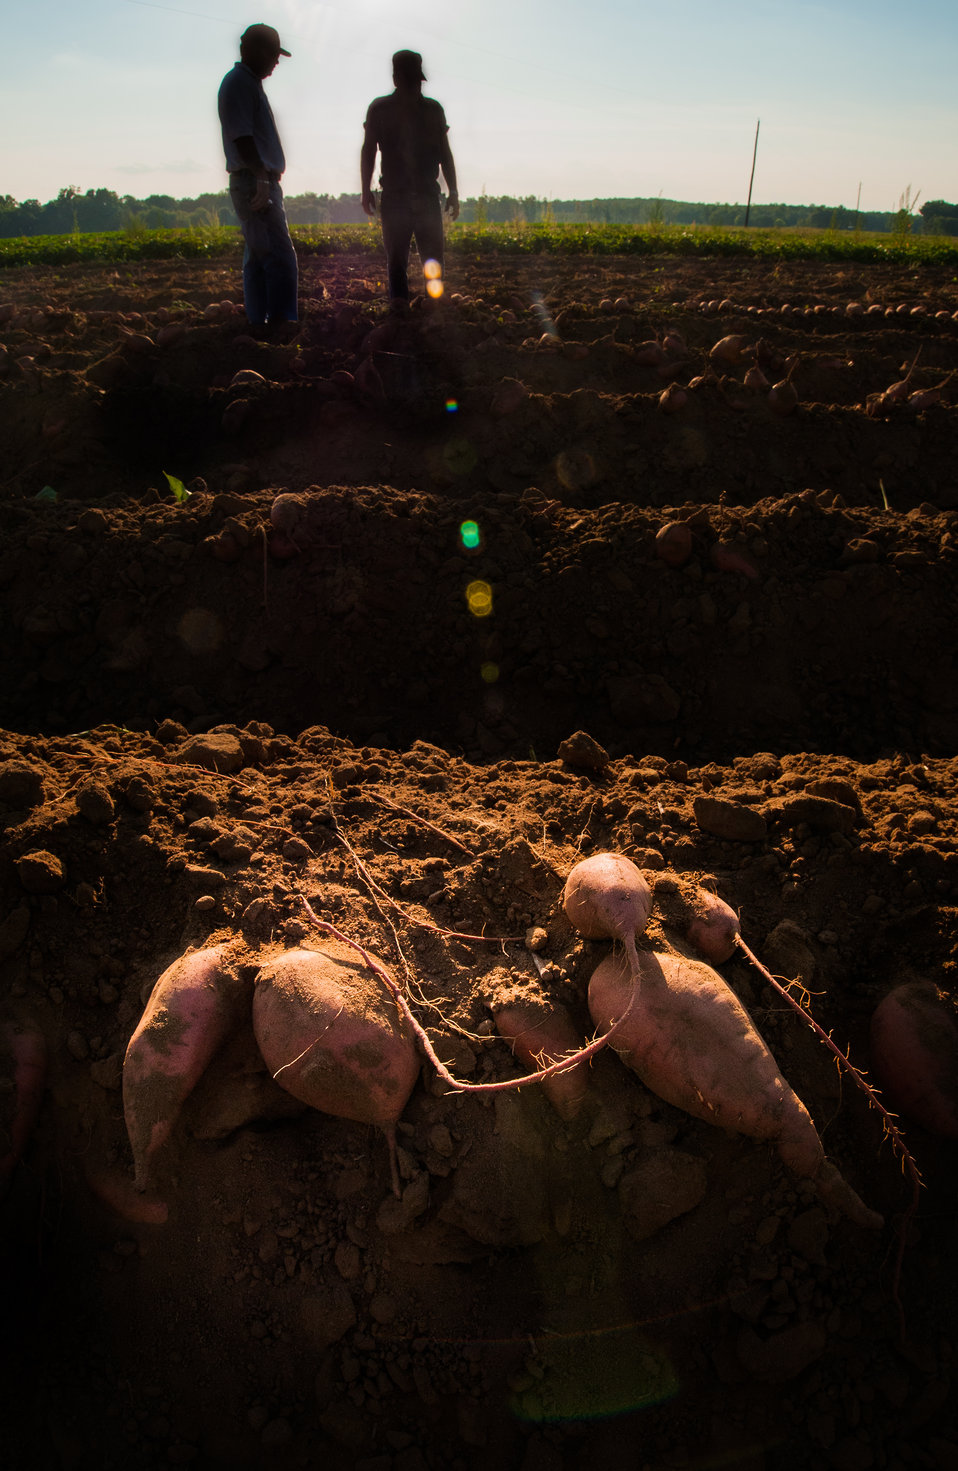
Large sweet potatoes are harvested at Kirby Farms in Mechanicsville, VA on Sep. 20, 2013. Kirby Farms is a third-generation family farm that covers 500 acres, and generates produce and grains on a year-around operation. Please see the photoset description for more information about this farm operation.